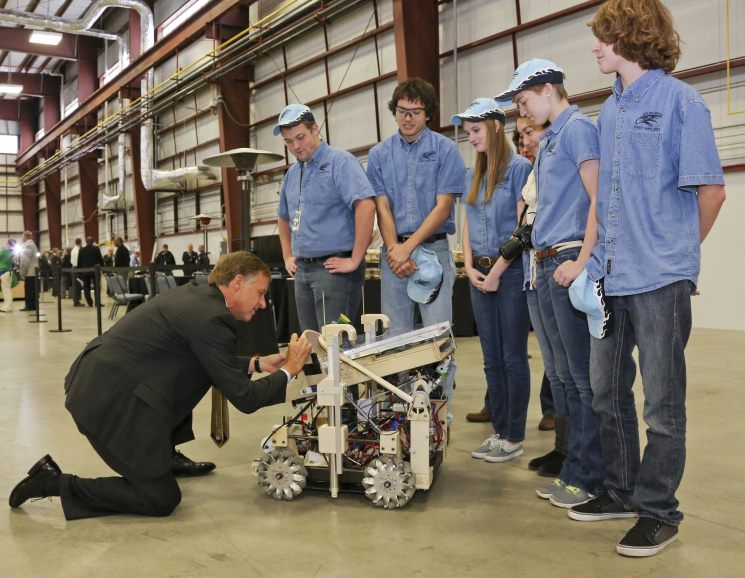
Photo of the Week: RoHAWKtics at Oak Ridge National Laboratory

Tennessee Governor Bill Haslam signs the robot of Hardin Valley Academy's FIRST robotics team during the dedication of DOE's Carbon Fiber Technology Facility, located at Oak Ridge National Laboratory. The RoHAWKtics team (named after their school mascot) spent an intense six weeks constructing the robot, using design, engineering, and problem-solving skills. The team will be moving on to a national competition in April.